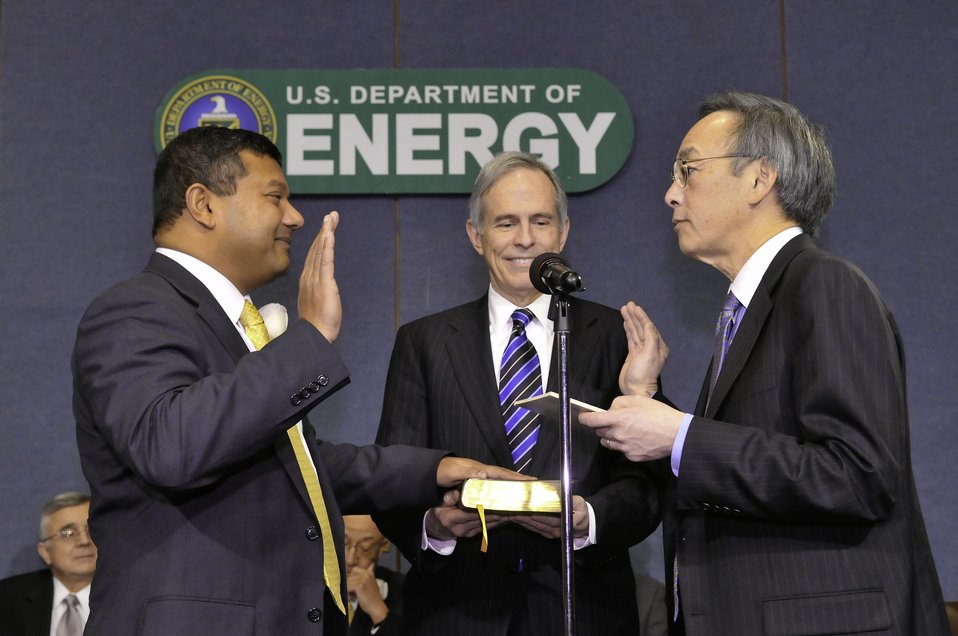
DDFCD~1